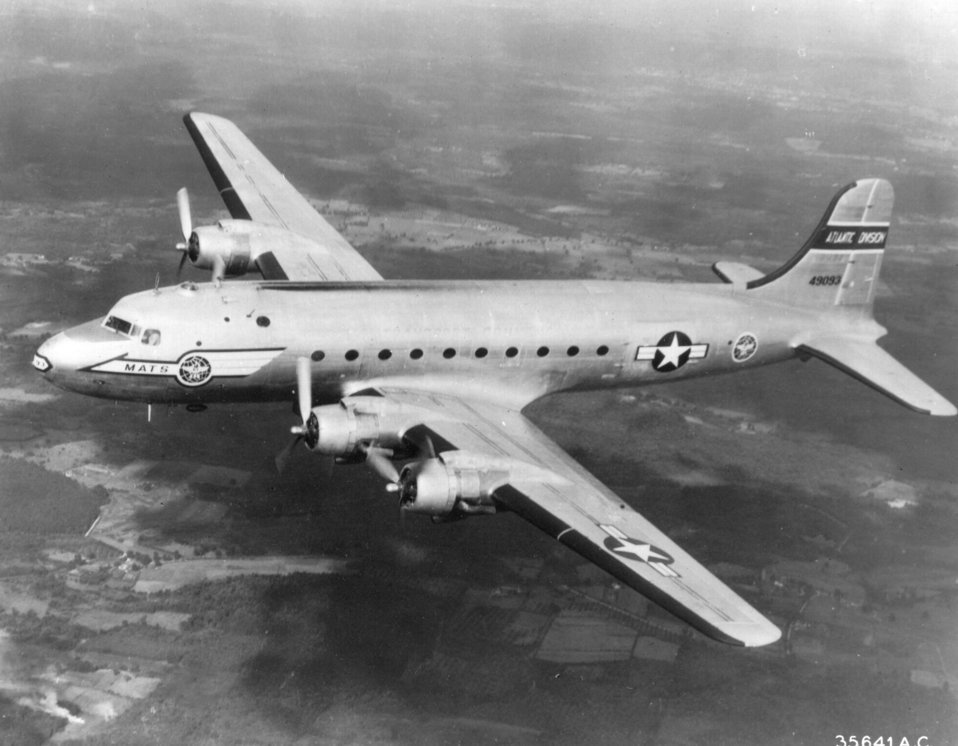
C-54 Skymaster